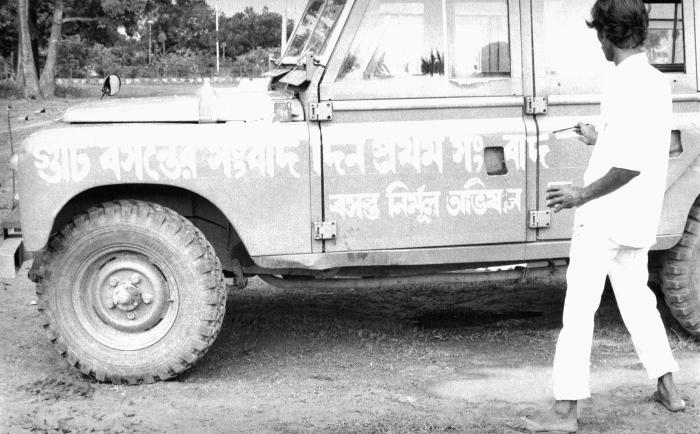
This 1975 photograph depicted a Bangladesh man who had been employed as a full-time sign painter, whose job it was to paint smallpox-related pictures, and messages pertaining to the smallpox eradication efforts, on vehicles such as the Mahendra Jeep that was shown in this image. It took all types of vocations in order to conquer this dreaded disease, evidenced here by this picture of the sign painter producing his 'mobile message'.